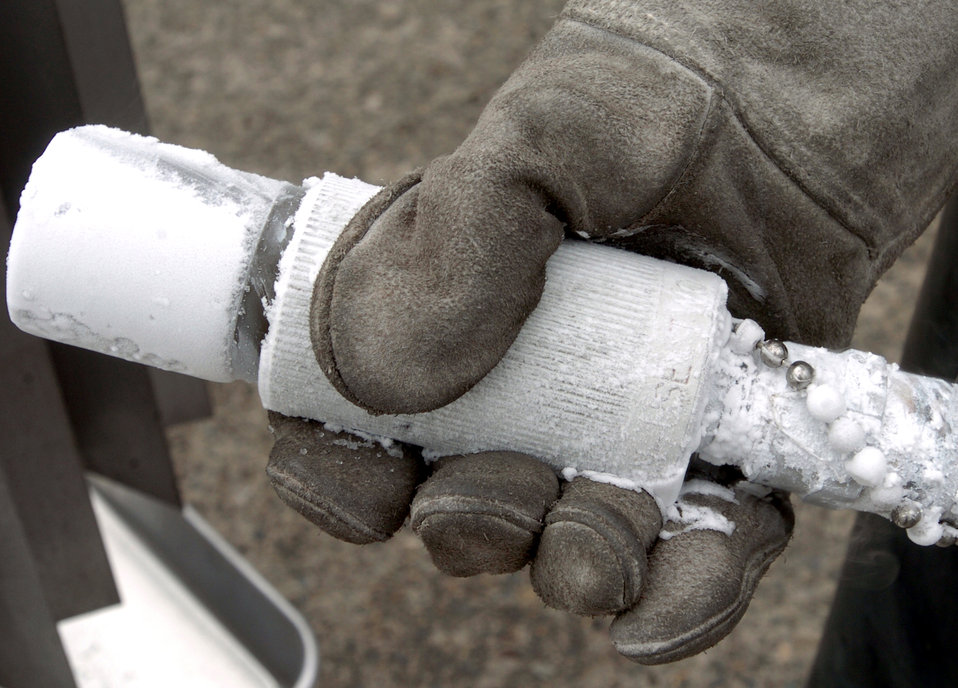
A draining task

YOKOTA AIR BASE, Japan -- Airman 1st Class Andrea Jones holds a frozen hose after draining a liquid oxygen cart. Technicians with the 374th Maintenance Squadron here ensure valves, discs, hoses and plumbing lines on liquid oxygen carts are in good condition.